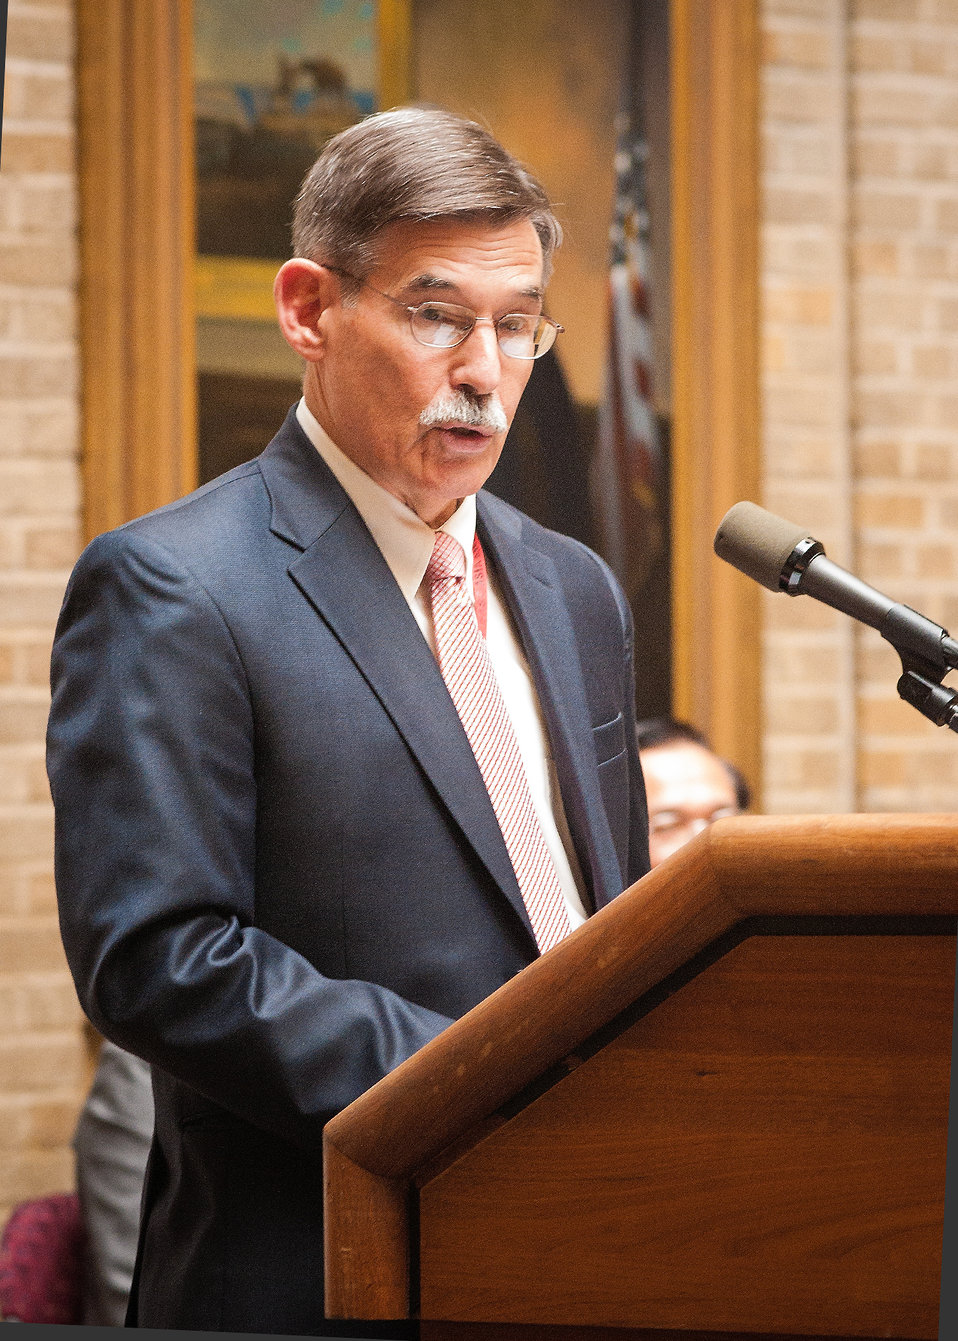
Rick Ruzicka, Director for Trade and Commercial Programs, American Institute in Taiwan welcomes representatives of the Taiwan 2013 Goodwill Trade Mission to the United States Department of Agriculture in Washington, DC, Mon. Sept. 9, 2013.